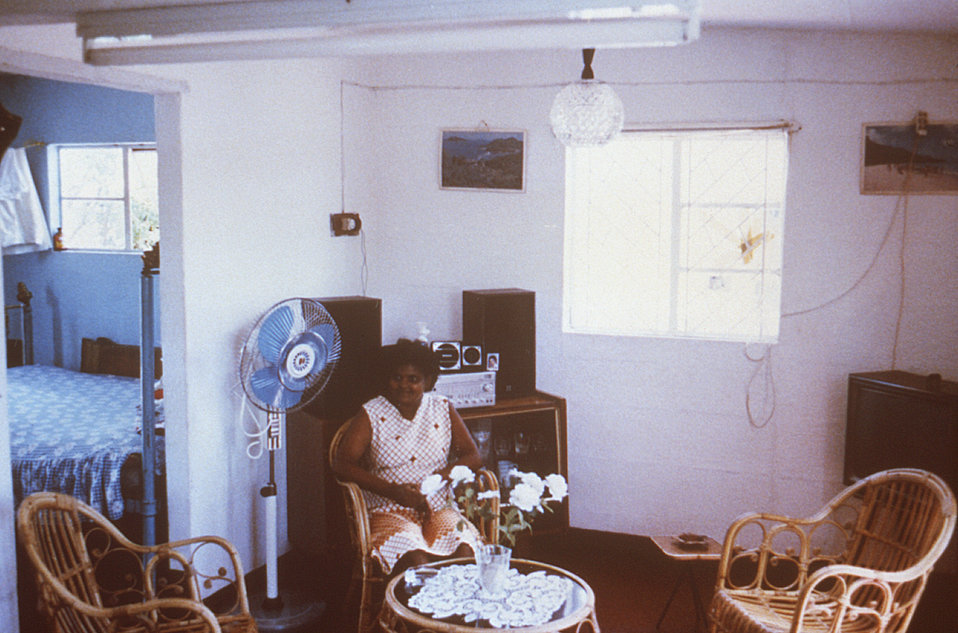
This typical Cite' Roche Bois, Mauritius home was photographed in 1980 during a typhoid outbreak investigation.